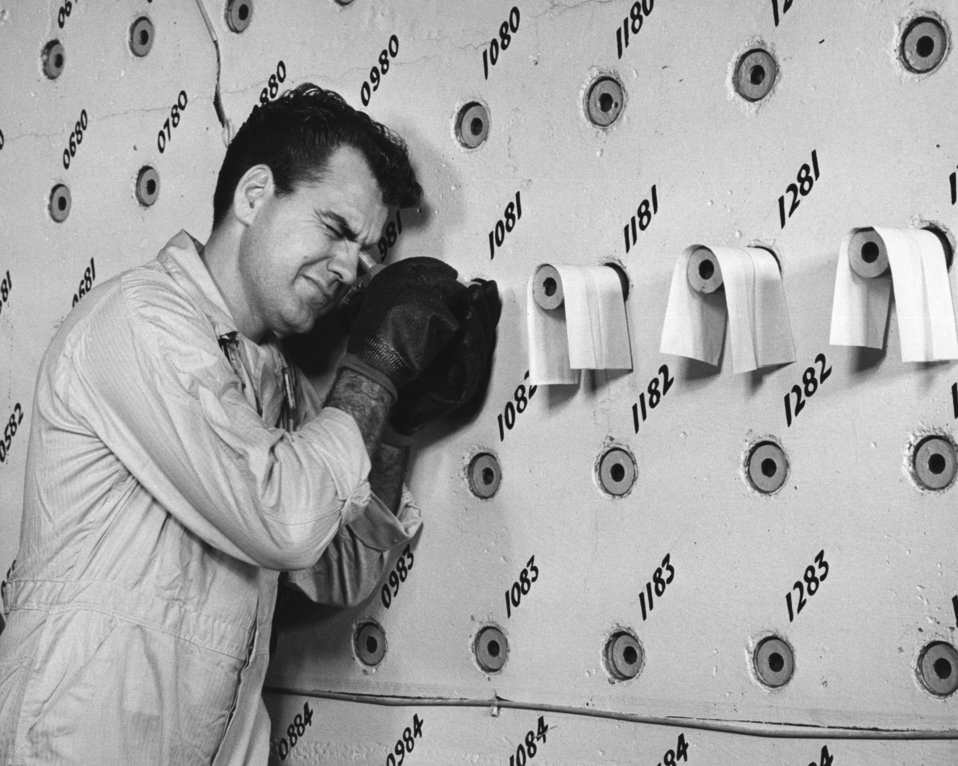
Worker on Face of Graphite Reactor Oak Ridge

57-1560 DOE photo Ed Westcott 1957 Oak Ridge Tennessee